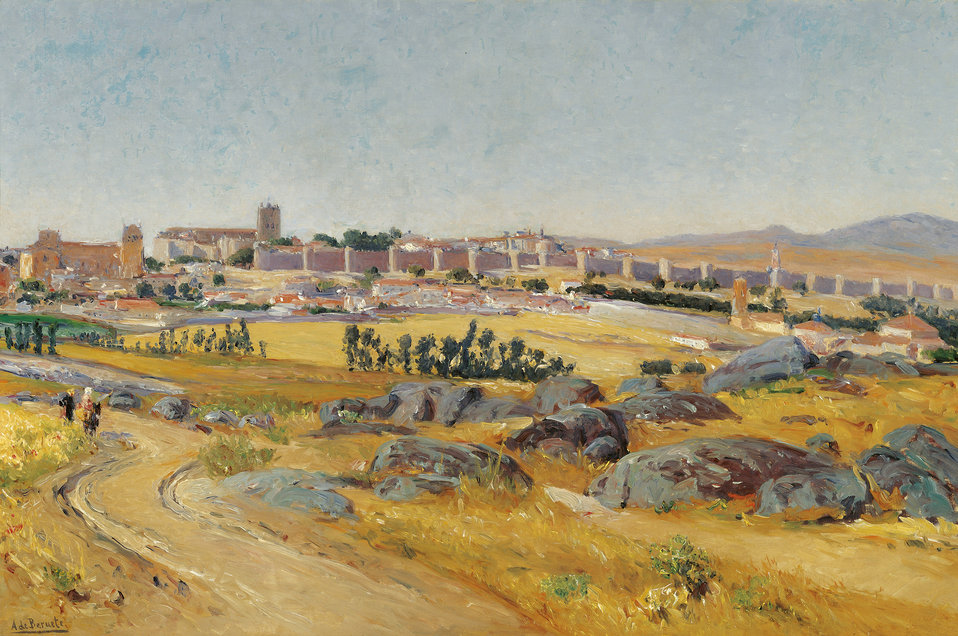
Ávila. Oil on canvas 67 x 100 cm Inv. CTB.1997.37 Museo Carmen Thyssen Native name Museo Carmen Thyssen Location Málaga, Spain Coordinates 36° 43′ 17″ N, 4° 25′ 22″ W Established 2011 Website www.carmenthyssenmalaga.org